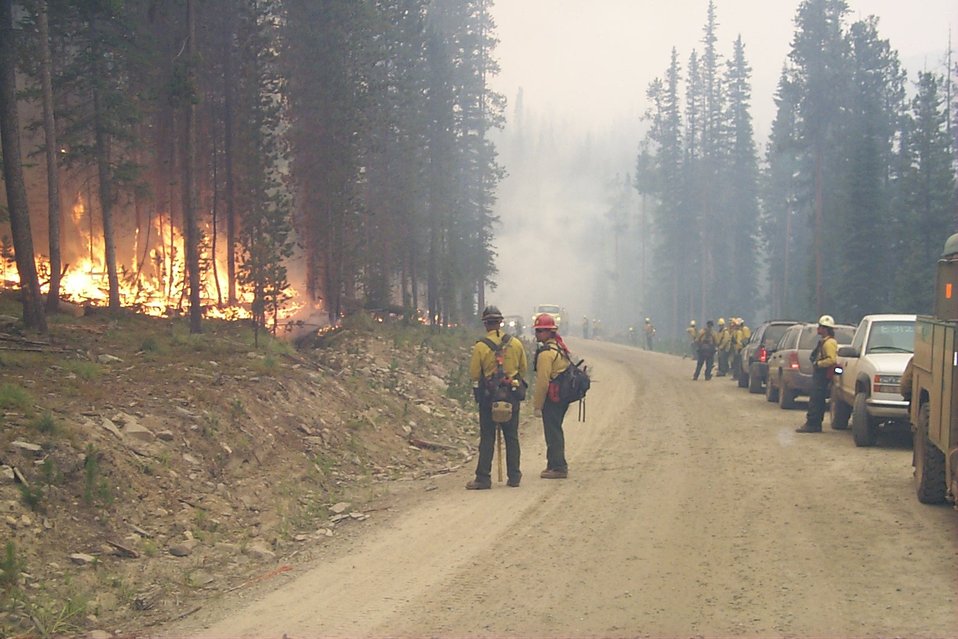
Controlled burn Fire Clearwater Fire Salmon Field Office USRD Upper Snake River District